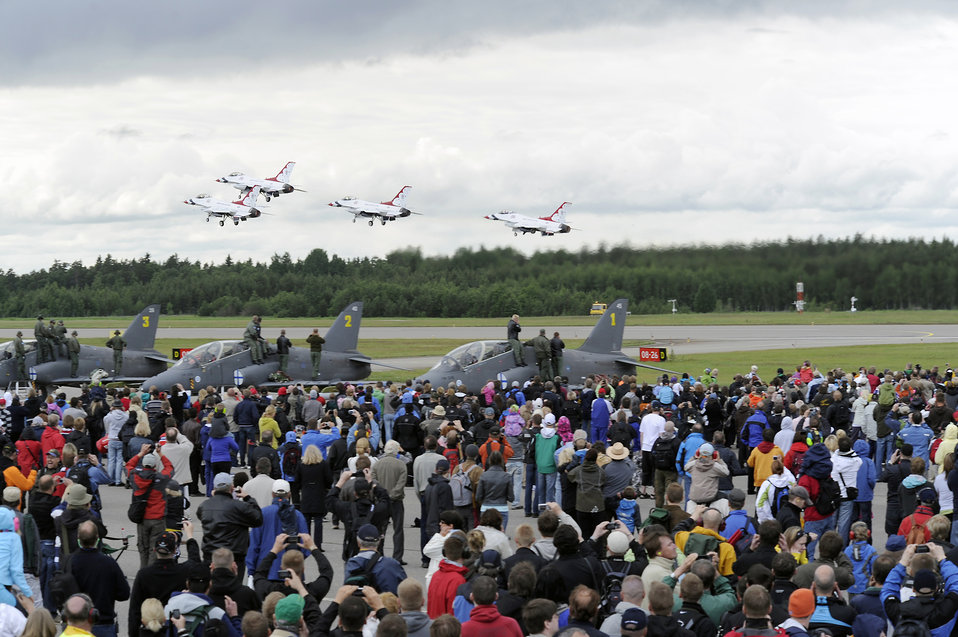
Thunderbirds in Finland

The Thunderbirds take off June 17, 2011, at Turku Airport, Finland.